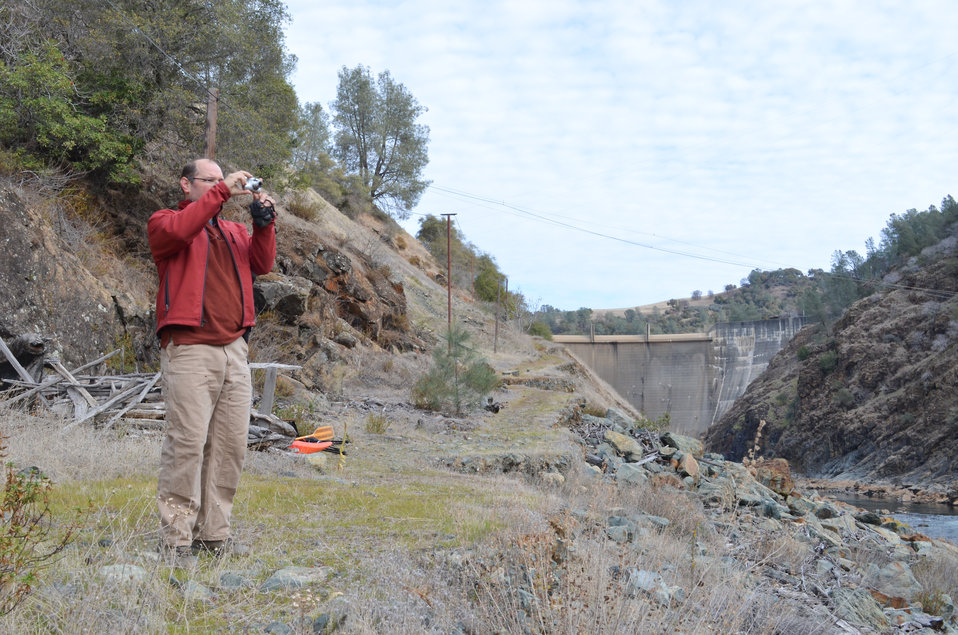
Building a 3-D model of Yuba River canyon

Dr. Greg Pasternack, hydrology professor at the University of California-Davis, photographs the Yuba River canyon below Englebright Dam near Smartsville, Calif., Jan. 6, 2012. Pasternack will compile the images to create a virtual 3-D model of the river canyon to aid future research. Under the direction of the National Marine Fisheries Service, the U.S. Army Corps of Engineers Sacramento District, which owns and manages the dam, has placed more than 5,000 tons of gravel in the river to improve spawning habitat for the threatened Chinook salmon and steelhead trout species. Pasternack designed the gravel injection project and is evaluating the gravel’s movement through the river course.